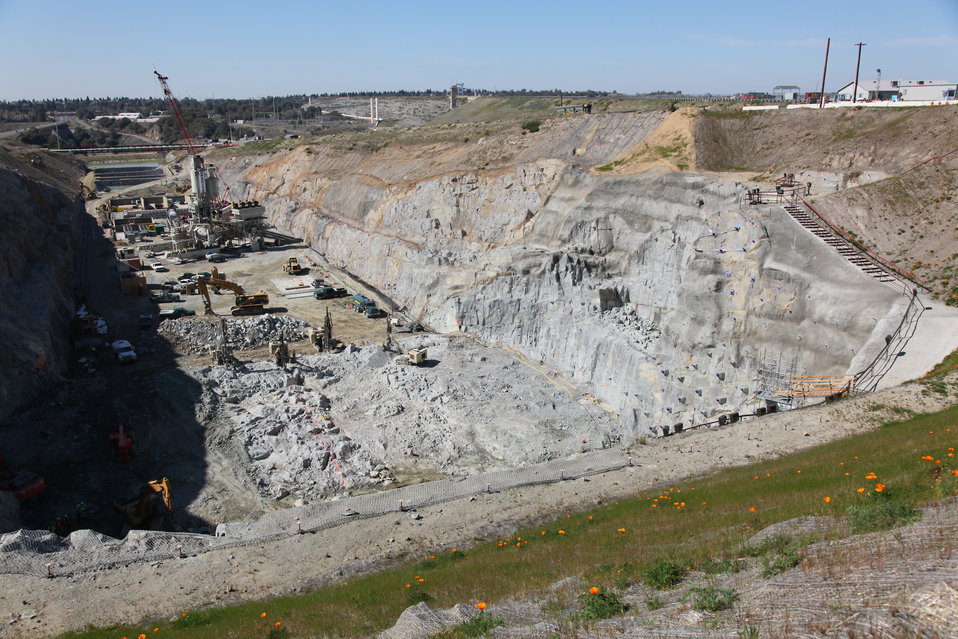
Drilling for final blasting at spillway

Contractors for the U.S. Army Corps of Engineers Sacramento District drill holes for the final blasting of the shear zone at the excavation site for the Folsom Dam auxiliary spillway in Folsom, Calif., March 8, 2012. The spillway, scheduled to be ready for use in 2017, will allow Folsom Dam to release water sooner and more safely. The project is part of the Folsom Dam Joint Federal Project, a joint effort of the Sacramento District, the U.S. Bureau of Reclamation, the Central Valley Flood Protection Board and the Sacramento Area Flood Control Agency to improve the safety of the dam and reduce flood risk for the greater Sacramento area.